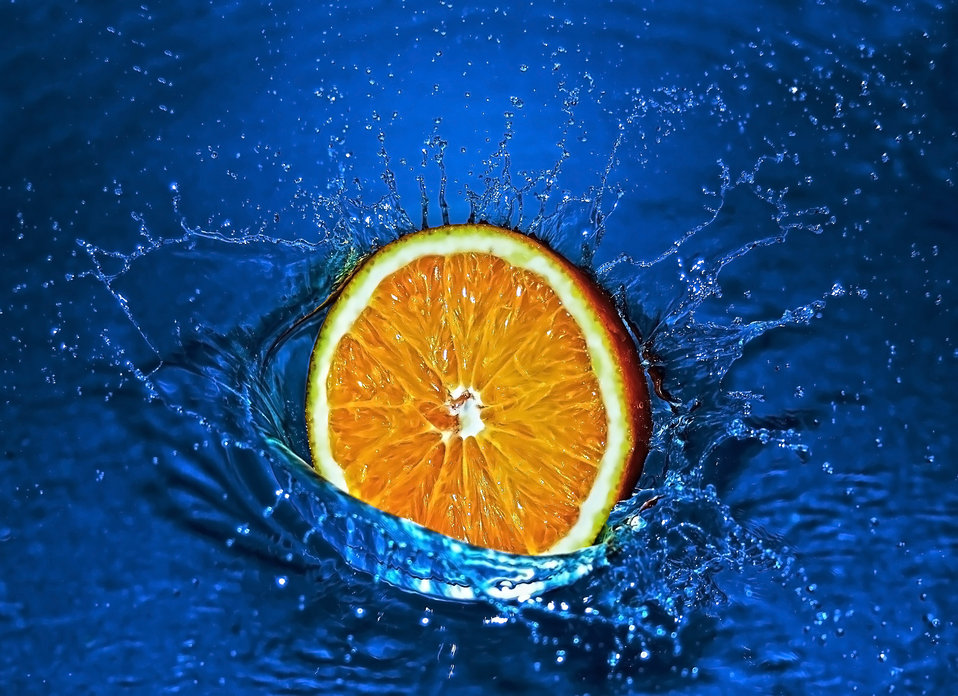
Splash #2

A half of orange falling into water bowl.